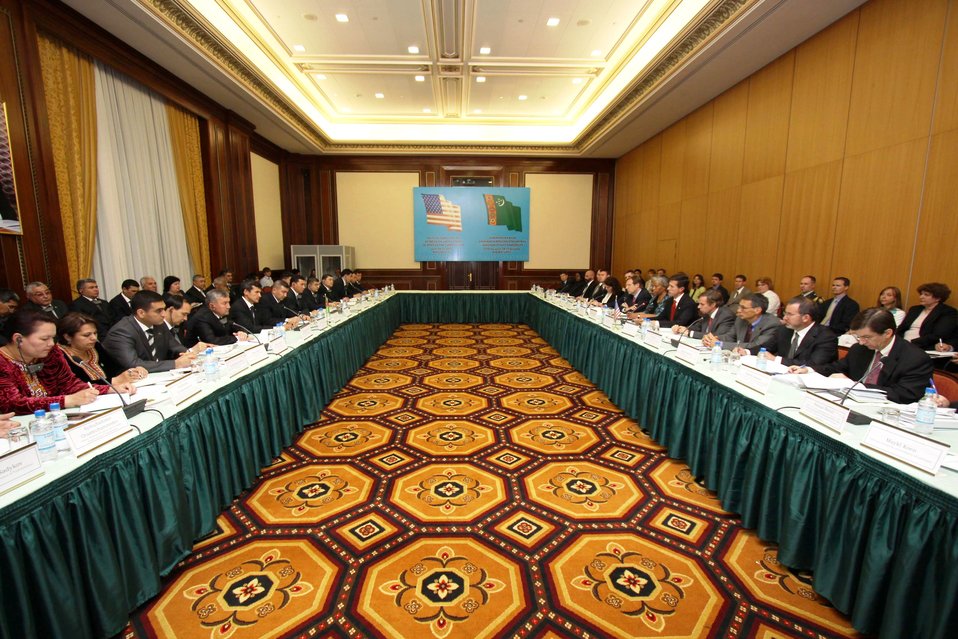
Delegates participate in the Opening Session of the Annual Bilateral Consultations (ABCs) between the Government of Turkmenistan and the Government of the United States in Ashgabat, Turkmenistan, on June 14, 2010.